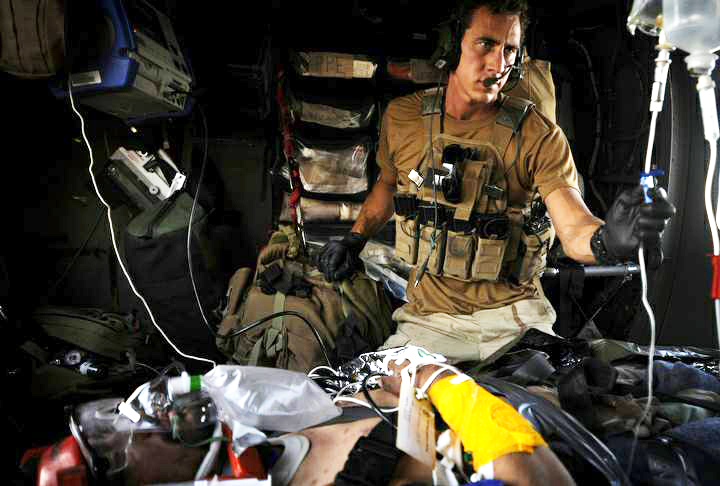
USAF rescue aids in 'Golden Hour' recovery of coalition forces.

Senior Airman Noah Landwerlen cares for a patient while waiting for a wounded Afghan National Army soldier to be loaded into an HH-60G Pave Hawk in the Hemalnd Province, Afghanistan, June 27. Airman Landwerlen is a pararescueman with the 129th Expeditionary Rescue Squadron. The 129th ERSQ responds to emergency medical evacuation calls within the province, providing casualty evacuation and personnel recovery/combat search and rescue in support of Regional Command South.